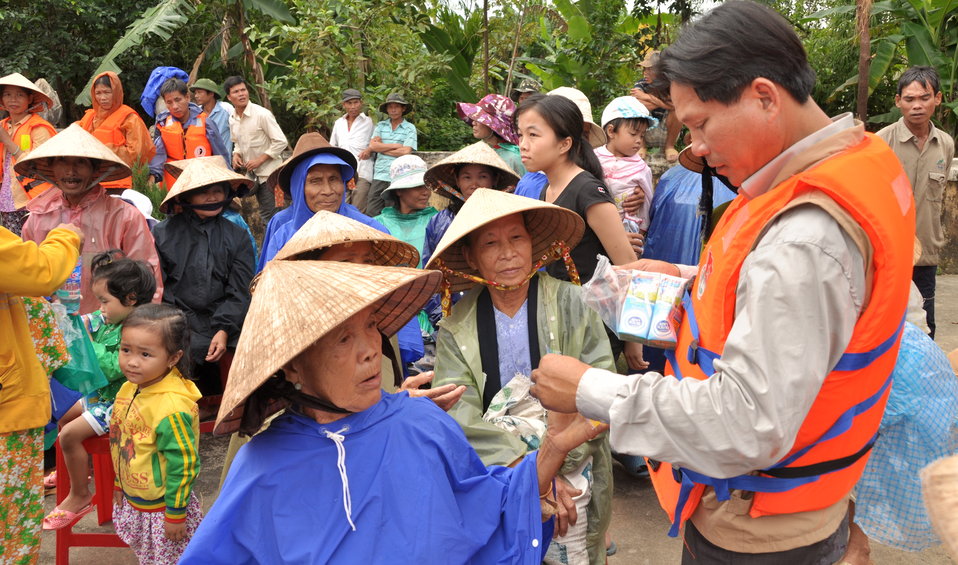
USAID and Save the Children support community evacuation drill and emergency preparedness in central Vietnam

Loc An Commune, Phu Loc District, Thua Thien Hue Province
December 4, 2012, Photo: Richard Nyberg, @USAIDVietnam